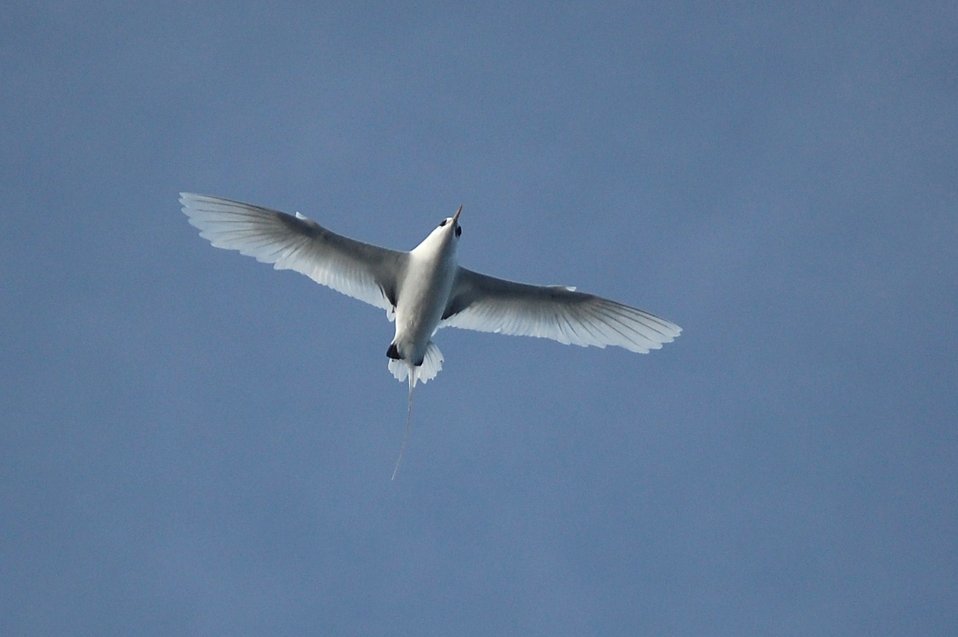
Tropic bird.